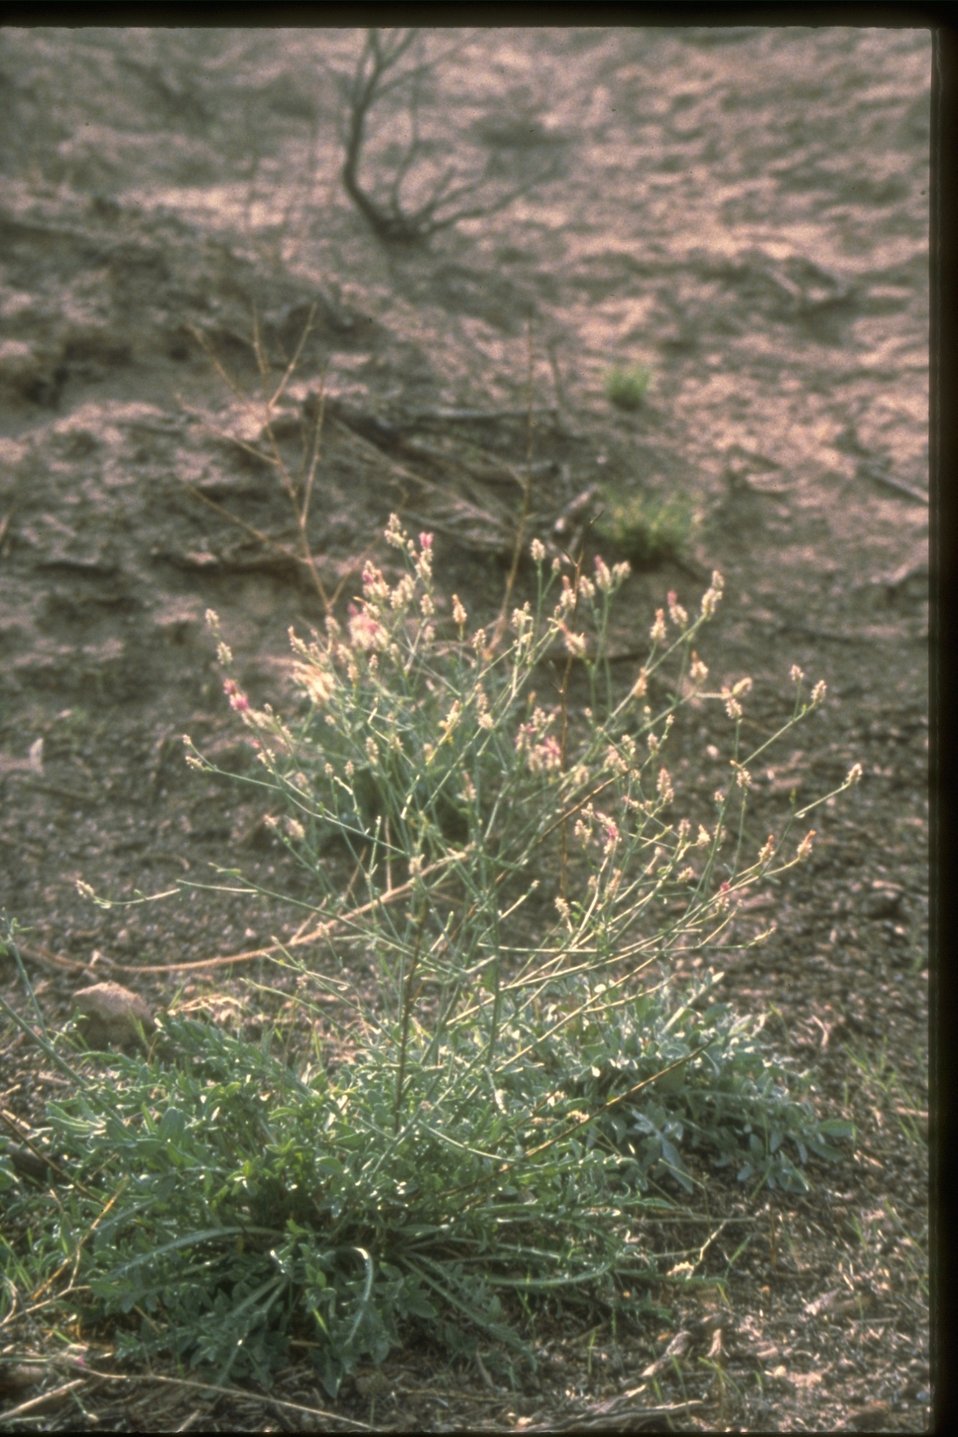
Squarrose Knapweed sprouting back after fire.